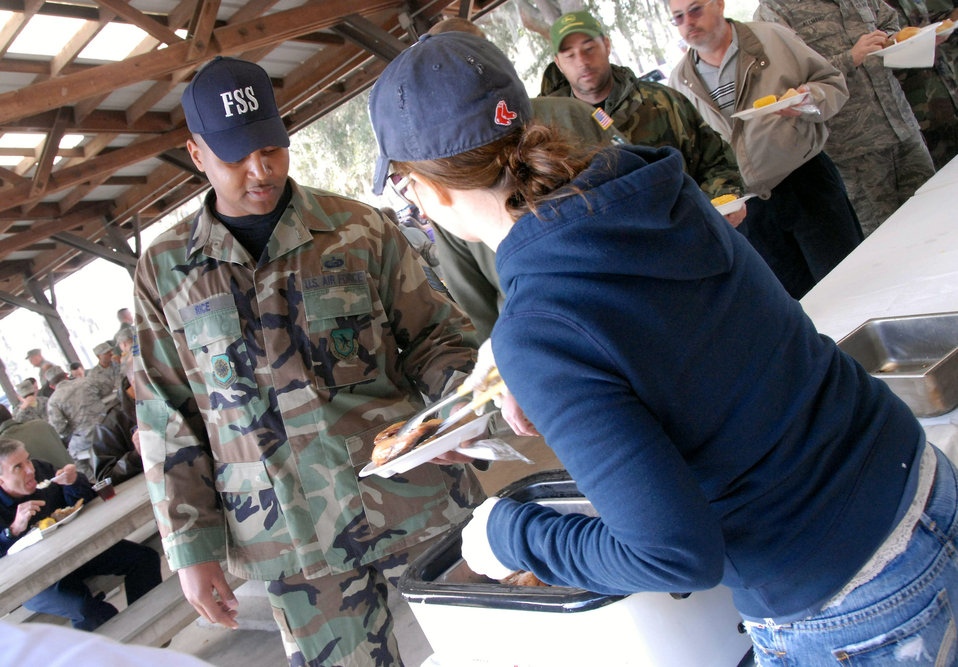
Charleston members aid injured Airman

Master Sgt. Lisa Peele serves chicken to Tech. Sgt. Tony Rice during a barbecue lunch fundraiser Jan. 23 at the picnic grounds on Charleston Air Force Base, S.C. The Top 3 raised $3,729 for the Master Sgt. Don Eagle Fund to help with the cost of remodeling his home to make it handicap accessible. Sergeant Eagle was struck by a motorist as he drove his motorcycle home in April 2008, and he is currently a paraplegic. Sergeant Peele is with the 437th Airlift Wing Inspector General Office and Sergeant Rice is with the 437th Force Support Squadron.